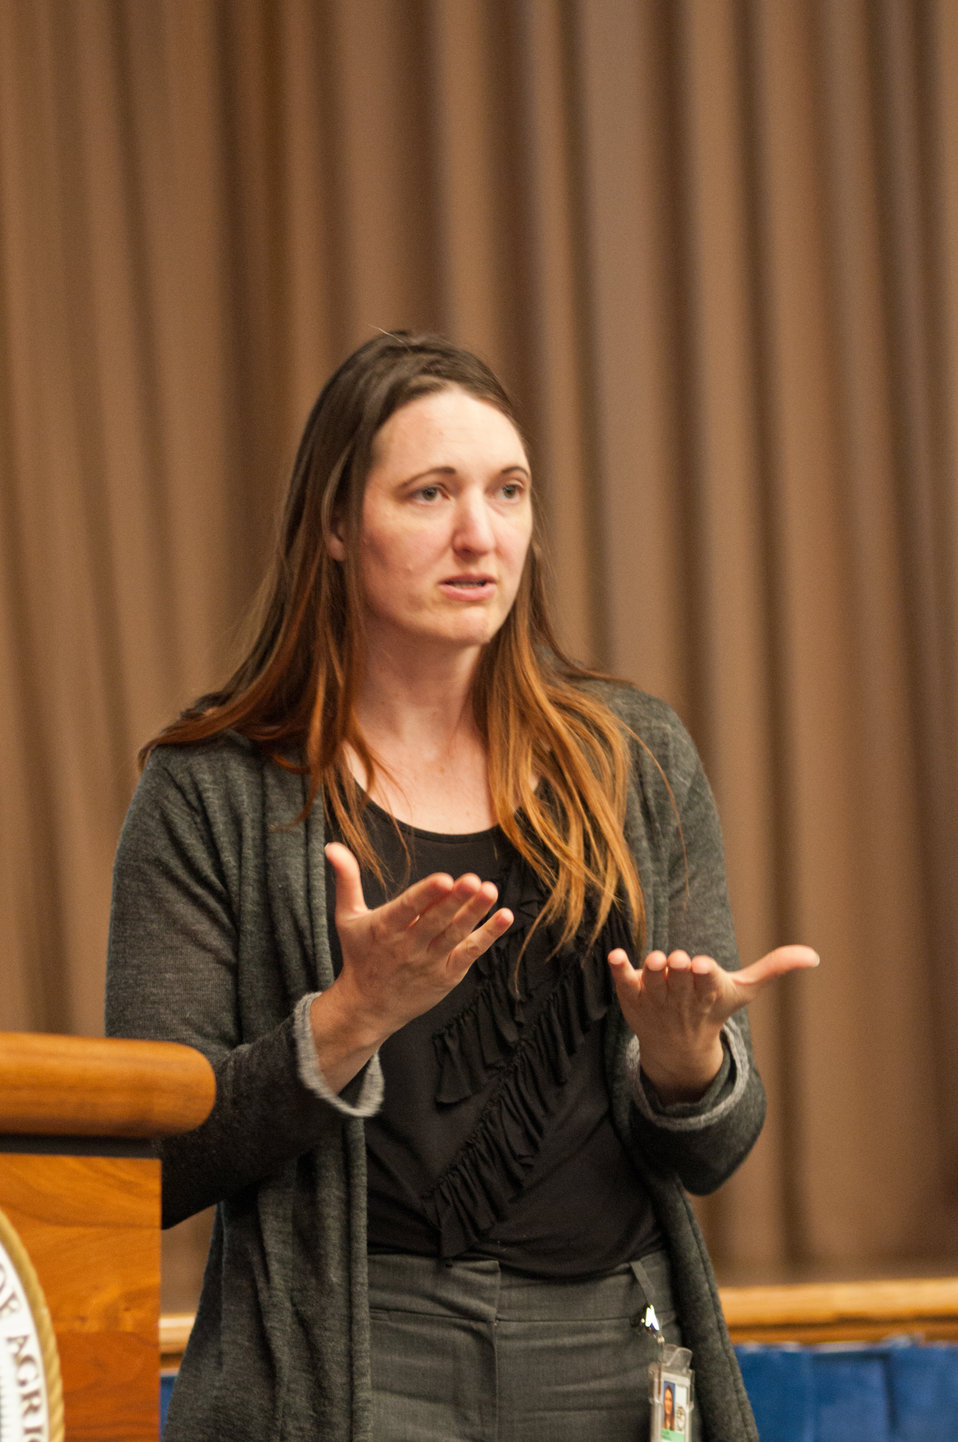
Partners in Sign (PINS) interpreter Nicole Shambounger signs for hearing-impaired employees during the at the U.S. Department of Agriculture (USDA) Office of Human Resources Management (OHRM) Disability Employment Program Team Training at USDA in Washington, D.C. on Tuesday, May 14, 2013. PINS has many years of interpreting experience and a reputation for personal involvement. Each assignment is handled with sensitivity to the needs of the individuals and setting. The PINS staff handpicks the interpreter from a team of many gifted and multi-talented interpreters for the assignment.